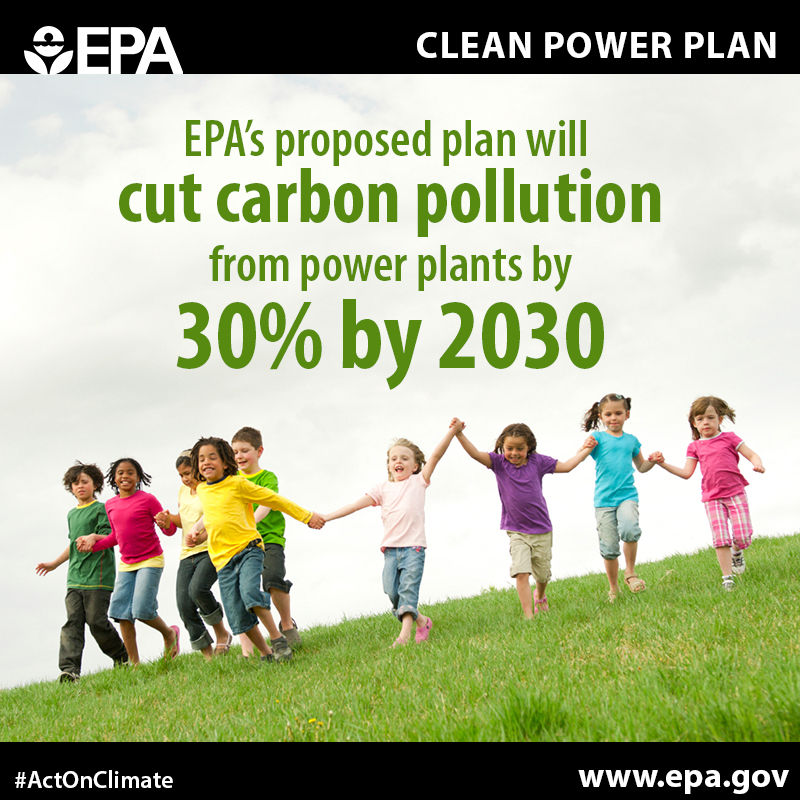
Cut Carbon Pollution by 30% by 2030

Take a deep breath! Our proposed Clean Power Plan will cut carbon pollution from power plants by 30% by 2030. www.epa.gov/cleanpowerplan #ActOnClimate